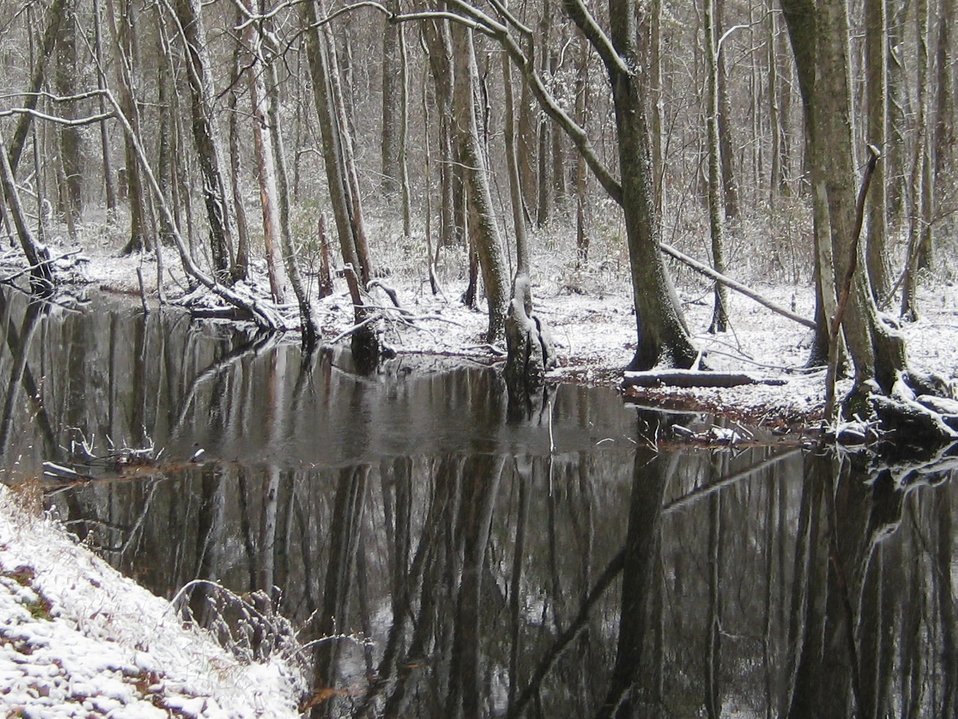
Jericho Ditch

Great Dismal Swamp National Wildlife Refuge, VA.